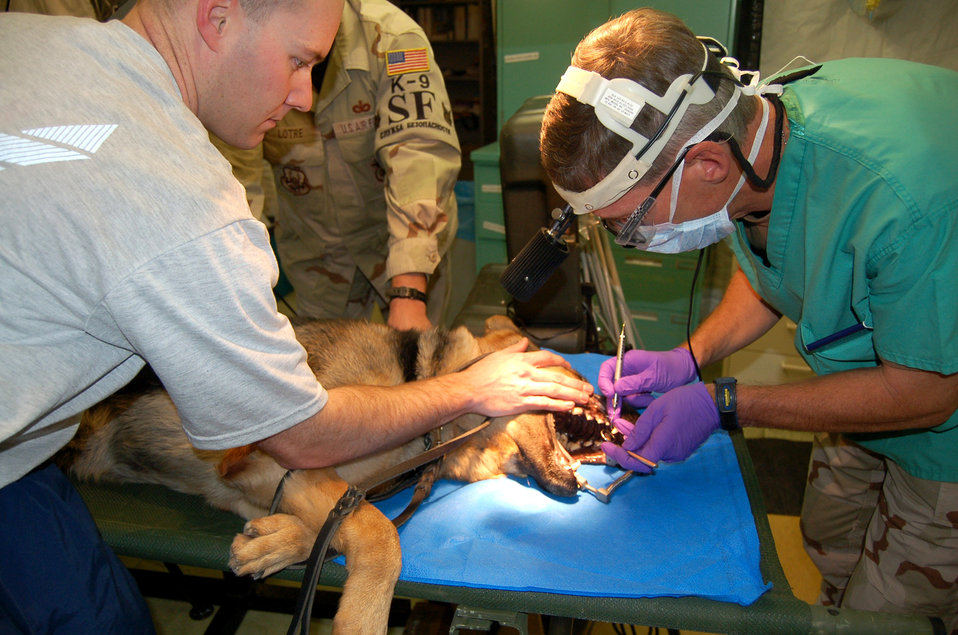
Chip away

Staff Sgt. Ryan Craig comforts his military working dog, Bruno, while Col. (Dr.) Marcus Beyerle repairs Bruno's chipped tooth Nov. 18 at Manas Air Base, Kyrgystan. Sergeant Craig and Bruno, deployed from the 99th Security Forces Squadron at Nellis Air Force Base, Nev., have been working as a team two years; this is their first deployment together. Sergeant Craig is with the 376th Expeditionary Security Forces Squadron, and Colonel Beyerle is a 376th Expeditionary Medical Group dental surgeon, also deployed from Nellis AFB. As active-duty members, military working dogs are eligible for the same medical benefits as their two-legged partners.